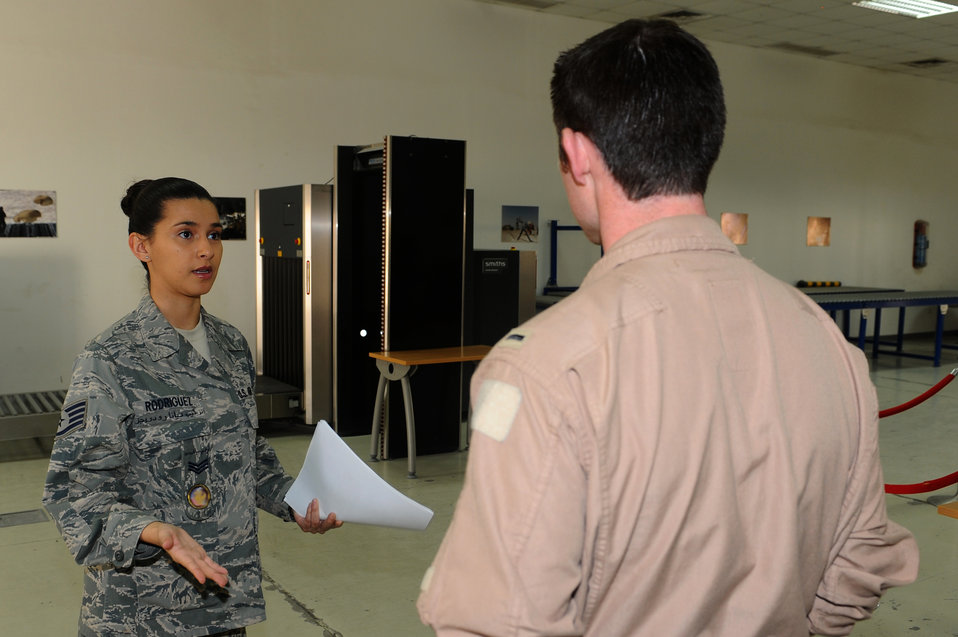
Coordination cell staff briefs servicemembers on host nation issues

Staff Sgt. Diana Rodriguez briefs an in-coming pilot on host-nation customs and courtesies Feb. 17, 2010, at a base in Southwest Asia. Sergeant Rodriguez is a host-nation coordination cell liaison team member.